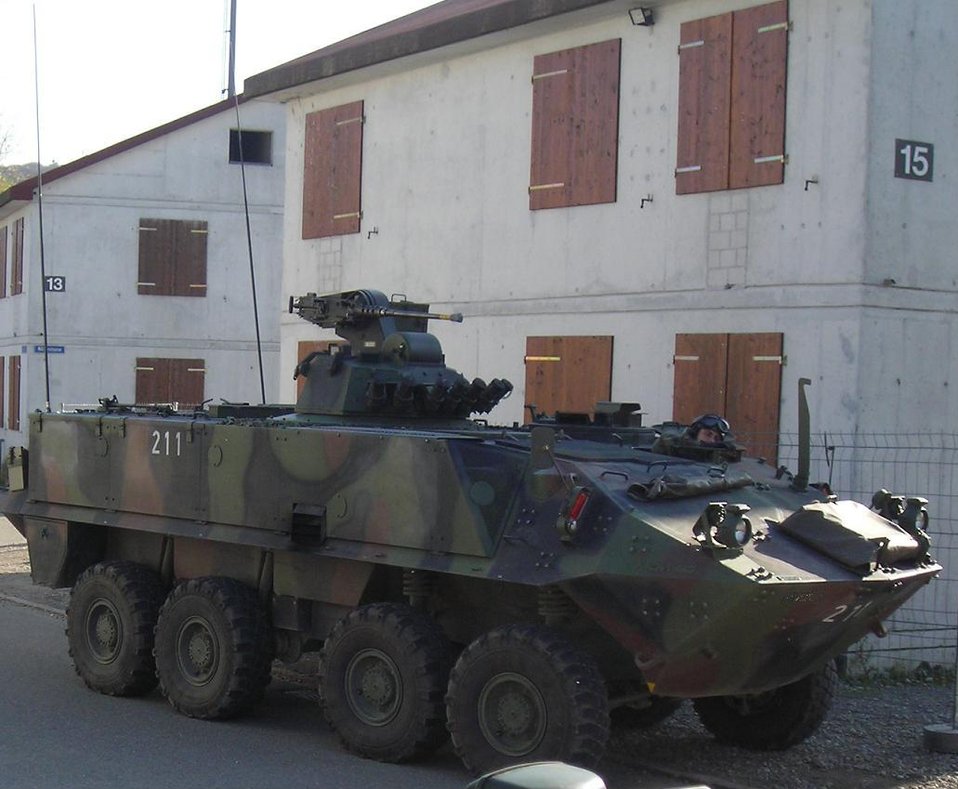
Deutsch: Radschützenpanzer 93